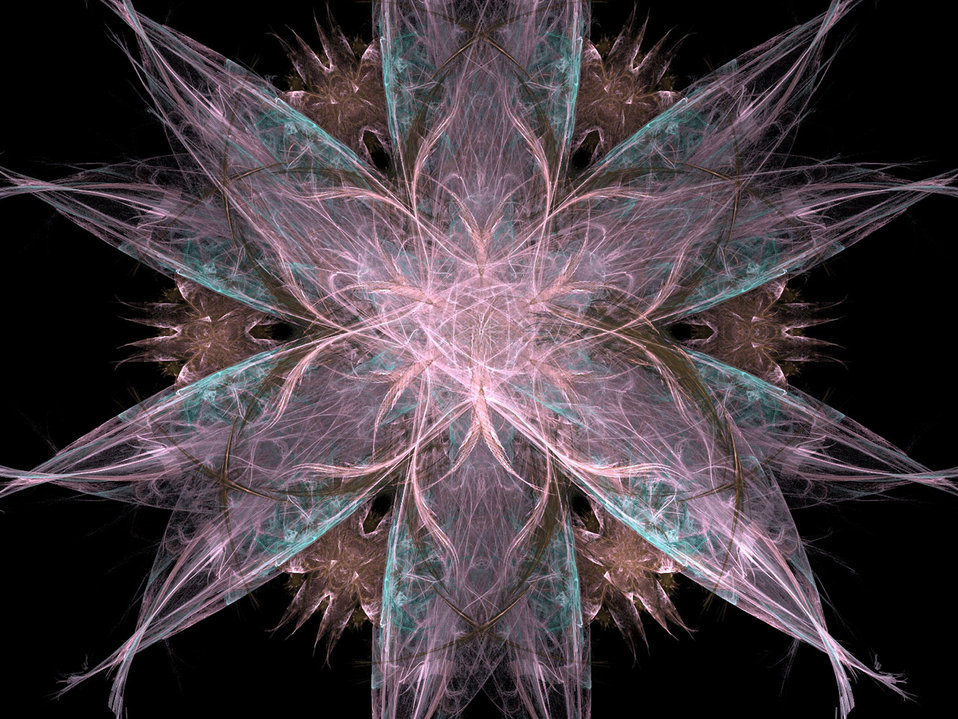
Star pattern fractal

Fractal in pastel shades in shape of stars.